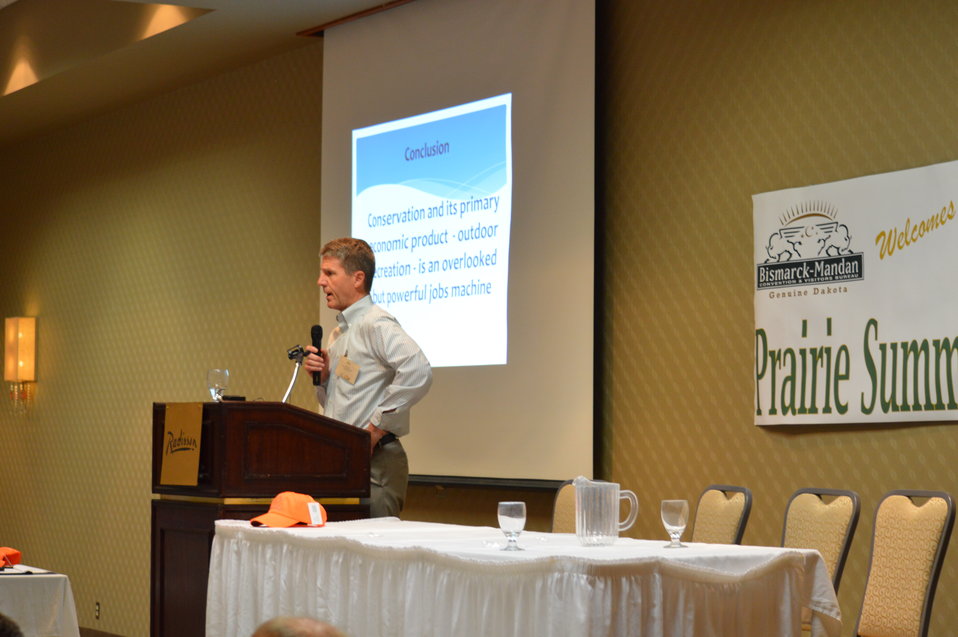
Paul Schmidt comcludes the Summit

Through the efforts of Ducks Unlimited and its partners, a Prairie Summit meeting was held in June 2013 in Bismarck, North Dakota, bringing key stakeholders to the table to identify and begin to address the immediate needs of the overall effort to conserve wetlands and grasslands, as well as bring media attention to the issues at hand and the urgency of the situation.